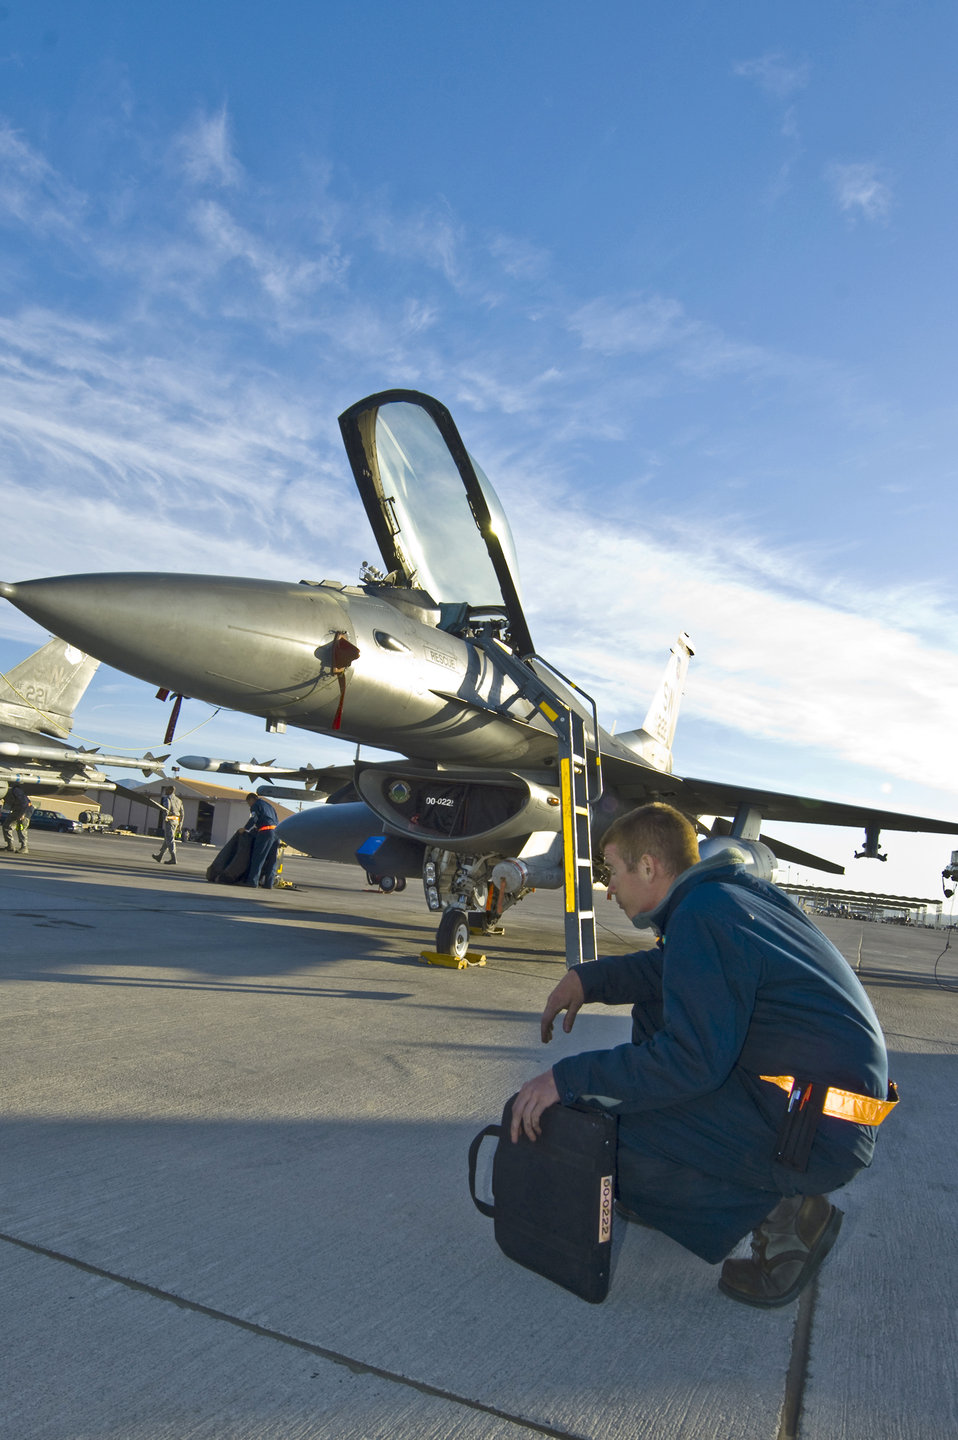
Ready to fly

Airman 1st Class Jeremy Andrews takes a short breather while waiting for the pilot to step to his F-16 Fighting Falcon April 28, 2011, during an exercise at Nellis Air Force Base, Nev. Airman Andrews is a crew chief from the 79th Aircraft Maintenance Squadron at Shaw AFB, S.C.